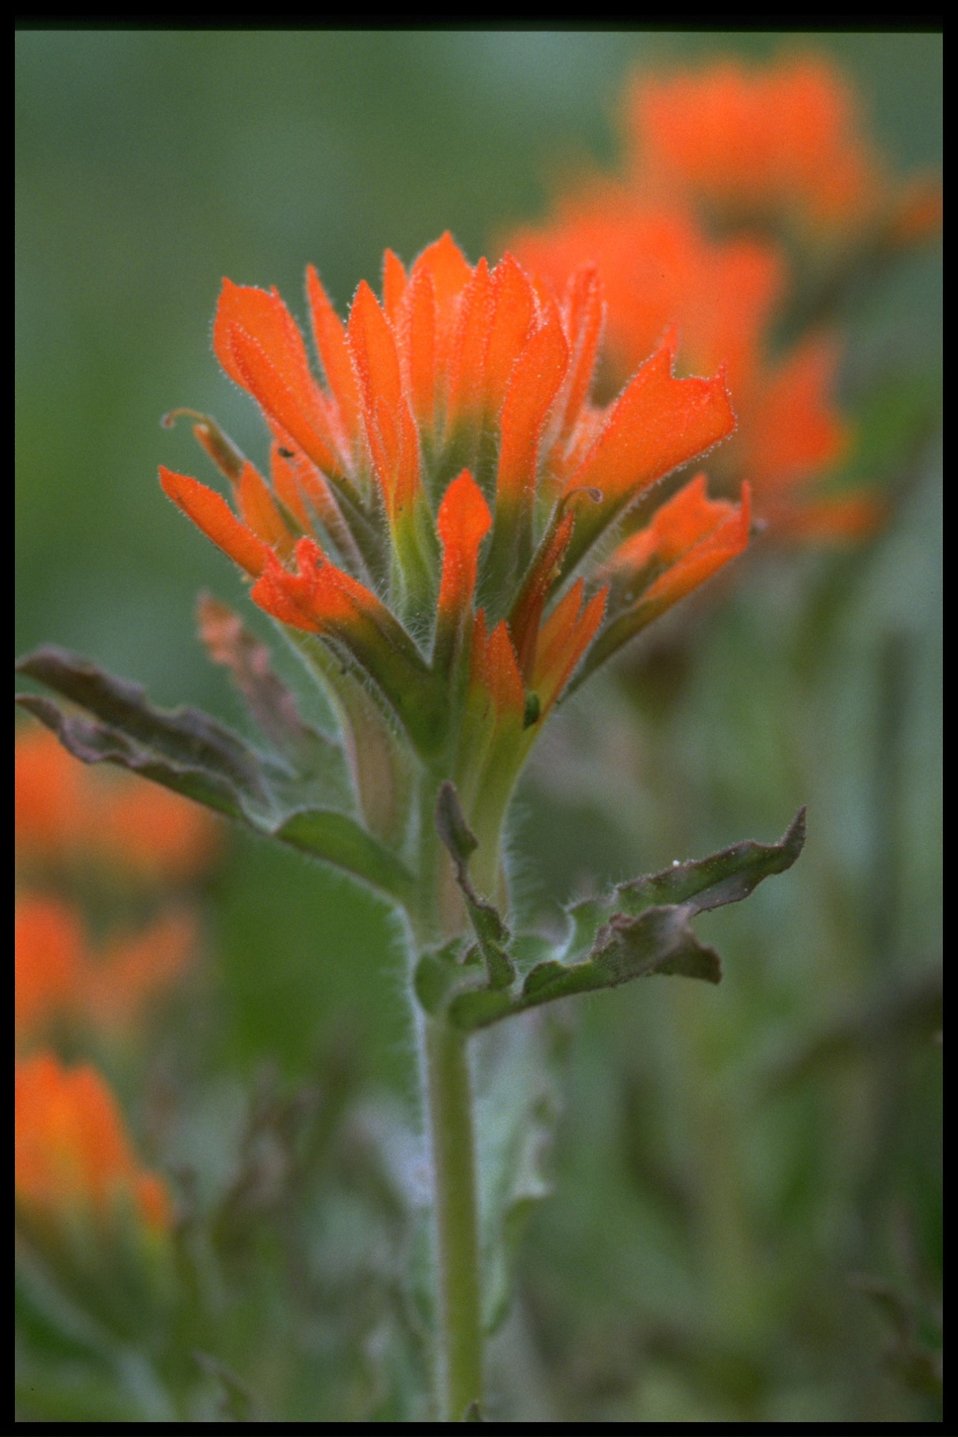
Closeup shot of wavyleaf Indian paintbrush (Castilleja applegatei).